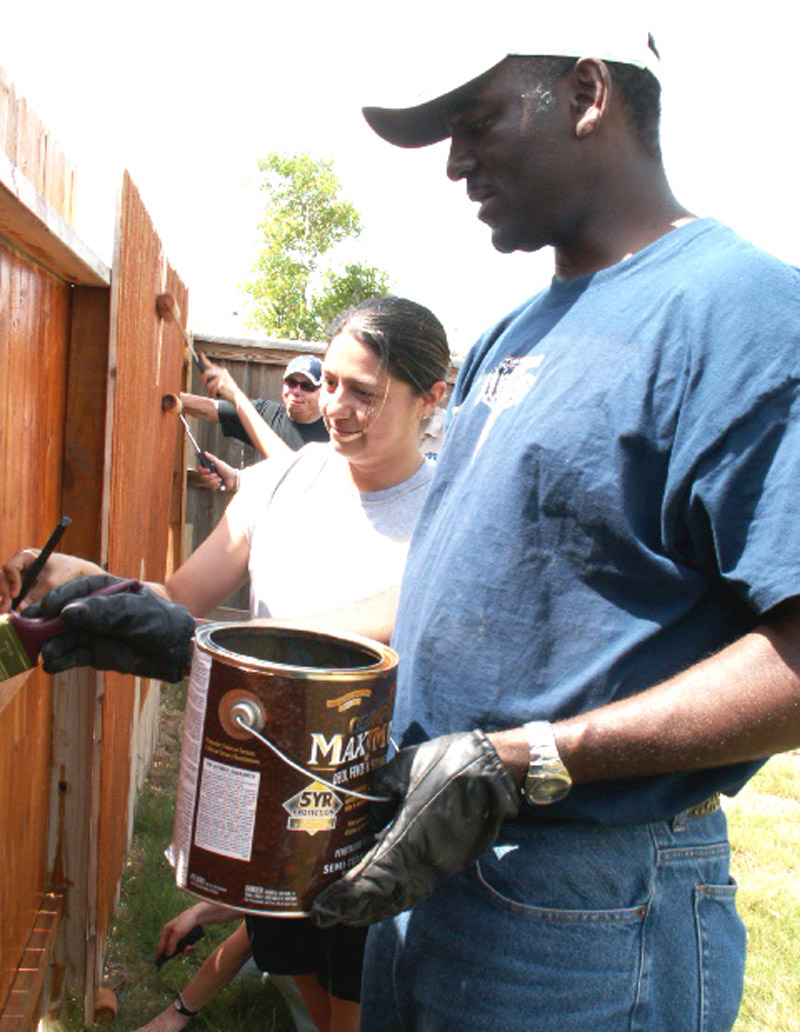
AFPC Airmen help wounded warrior improve quality of life

Tech. Sgt. Becca Dahl (left) and Master Sgt. Ken Pittman apply waterproofing to a fence as part of a volunteer effort supporting Operation Homefront April 30 in Cibolo, Texas. Volunteers from the Top 3 Association from Air Force Personnel Center from Randolph Air Force Base, Texas, helped craft a gate to provide better access between the front and back yards for Tech. Sgt. Israel Del Toro, an Airman recovering from wounds sustained during a roadside bombing in Afghanistan. Sergeants Dahl and Pittman are personnelists at AFPC.